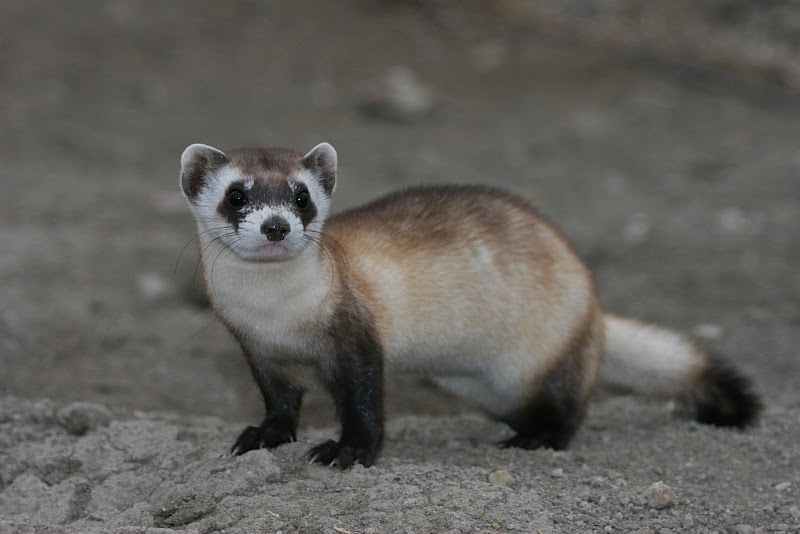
Black-footed Ferret